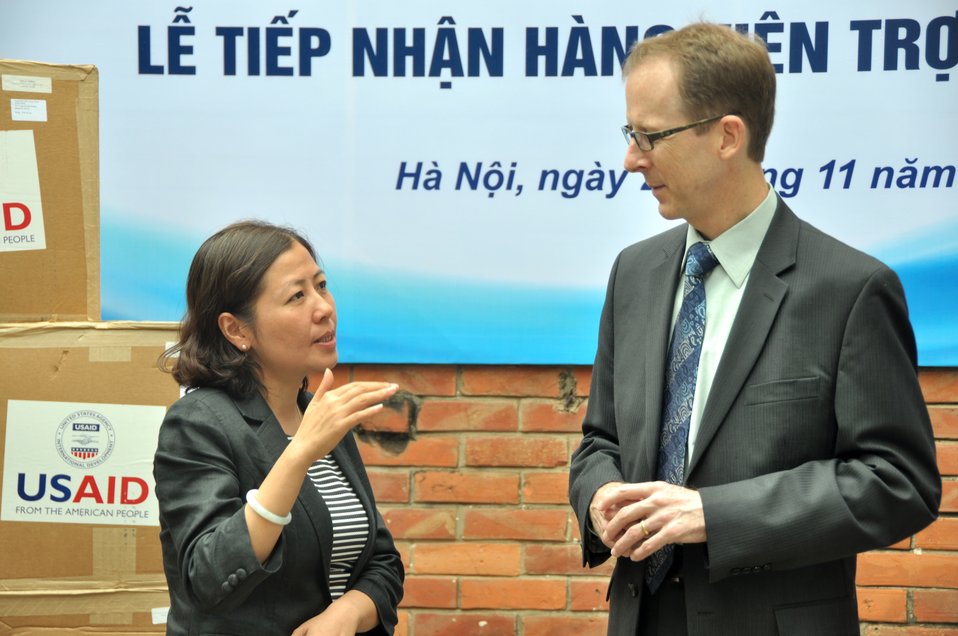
Dr. Nguyen Thu Thuy, Deputy Director General, Department of Animal Health, talks to USAID Mission Director Joakim Parker at the personal protective equipment handover ceremony.

Hanoi, November 20, 2013.